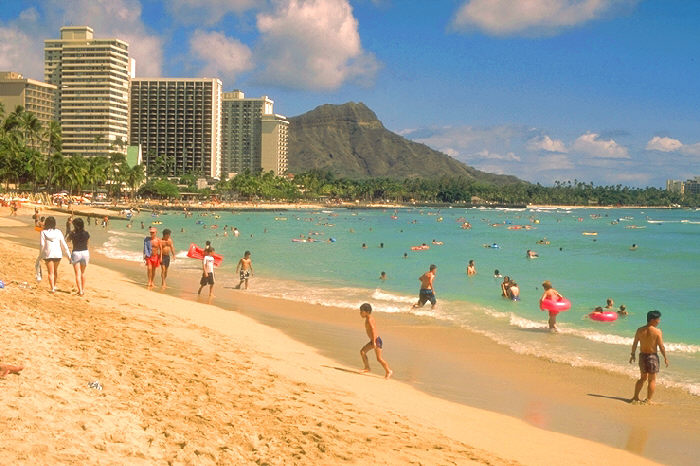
Waikiki Beach, Honolulu, Hawaii.